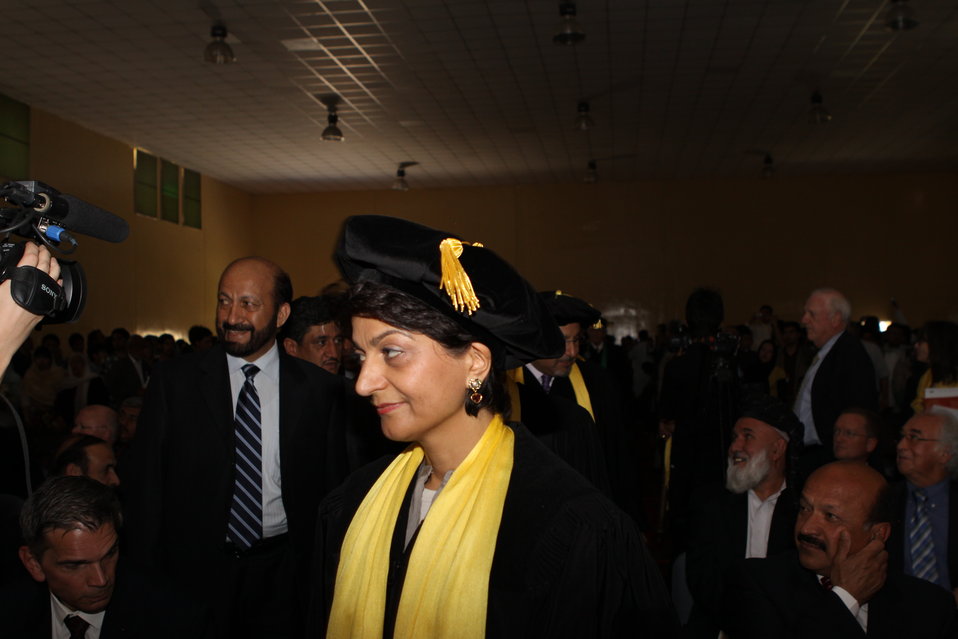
100526 AUAF Graduation 111